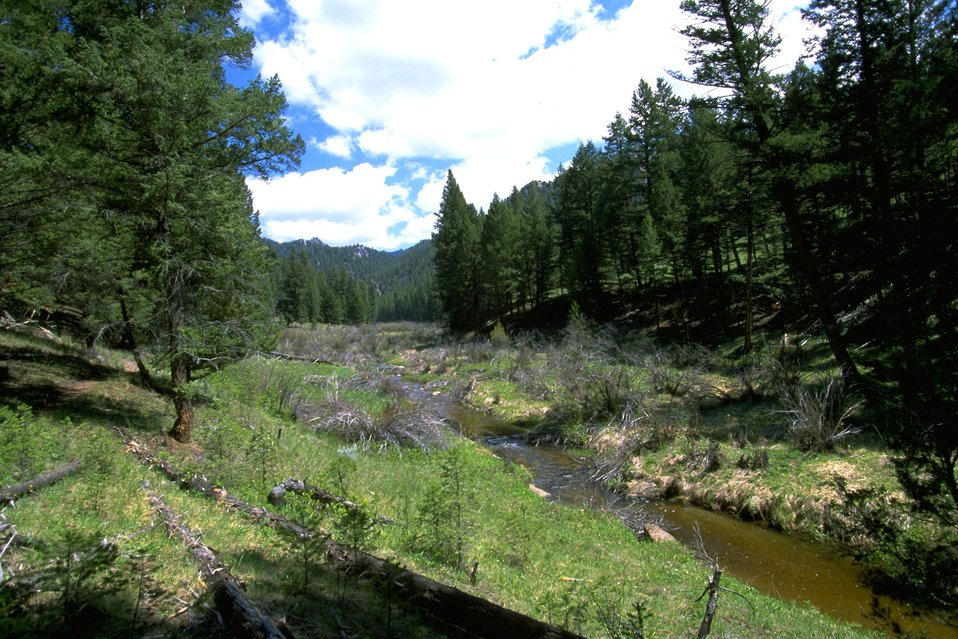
Moose Creek